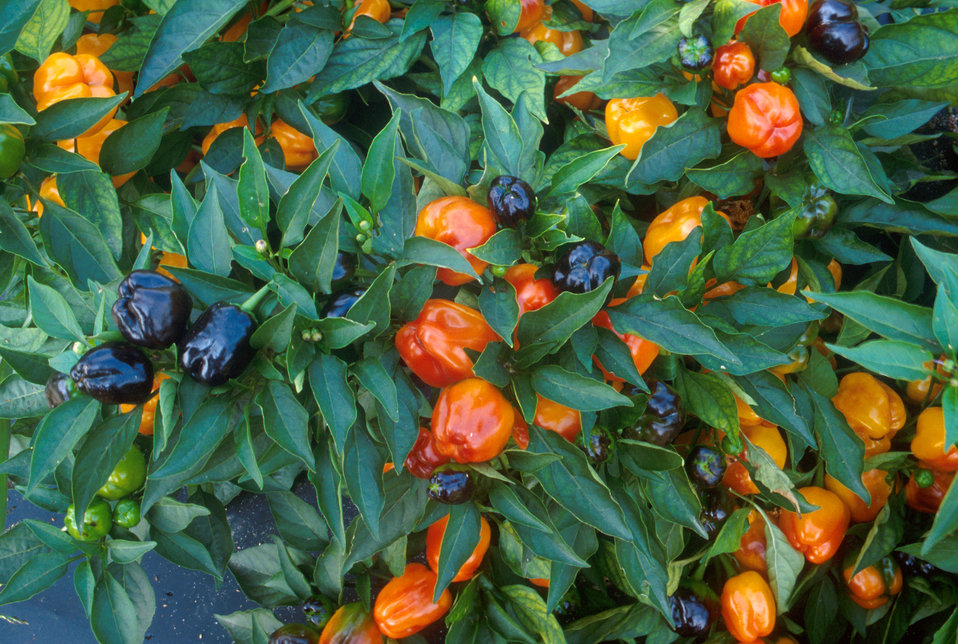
Miniature bell peppers change from purple to orange as they mature.